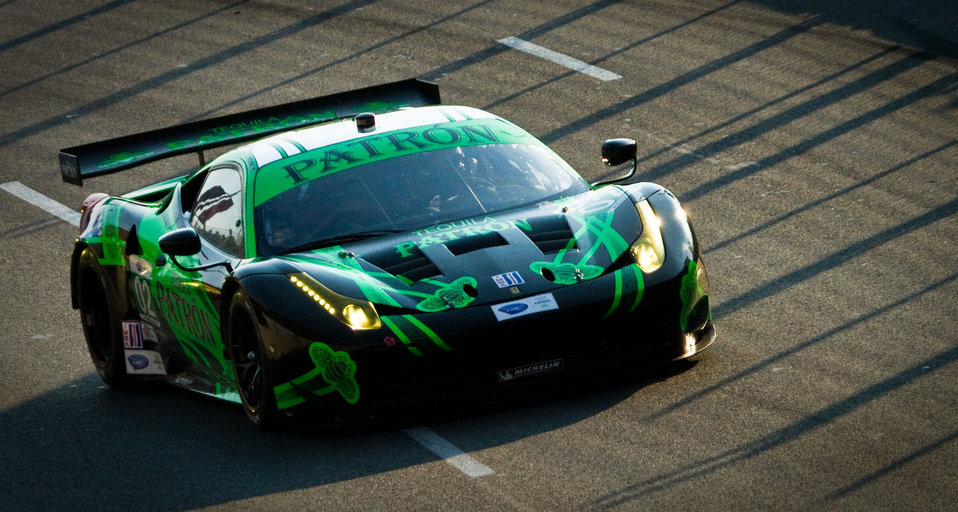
The Number 2, Ferrari 458 Italia of the Extreme Speed Motorsports Team, uses E85 fuel for the American Le Mans Series (ALMS) motorsport series at the Baltimore Grand Prix, on the streets of downtown Baltimore, MD, on Friday, August 31, 2012, Labor Day Weekend. ALMS says they are “the Global Leader in Green Racing by being the only racing series recognized to comply with the Green Racing protocols developed by the U.S. Department of Energy (DOE), the U.S. Environmental Protection Agency (EPA) and Society of American Engineers International (SAE).” Instead of high-octane gasoline all the cars in the series use one of 5 different forms of energy (system). Clean diesel, E85, E10, isobutanol or hybrid energy technology. The specific hybrid system, used by the Porsche GT3 cars, are a (battery-less) flywheel-based Kinetic Energy Recovery Systems. These organizations are accelerating technology development at speeds up to 200 mph, in 650-700 horsepower race cars that are based on two groups of cars; the purpose built prototype race cars and the GT
(Grand Touring) cars based on production sports cars that you can see in showrooms. From these groups, there are five classes of cars, all of which race at the same time during the race events.
The U.S. Department of Agriculture (USDA) focuses on renewable fuel sources that are profitable and sustainable. 2011 accomplishments include research and planning for renewable energy and investments in renewable energy production.
- Completed a Biofuels Roadmap proposing a plan of action to meet congressionally mandated RFS2 goals for national biofuels production.
-Coordinated five regional research centers to work on the science necessary to ensure profitable biofuels can be produced from a diverse range of feed stocks across the nation, not just in the Midwest where the industry is already thriving.
-Over three years, USDA invested about $320 million to accelerate research on renewable energy ranging from genomic research on bioenergy feedstock crops, to development of biofuel conversion processes and costs/benefit estimates of renewable energy production.
- More than 130 biodiesel and ethanol projects funded by USDA are currently producing almost 3.7 billion gallons of biodiesel and ethanol annually, enough fuel – in equivalence to gasoline – to keep five million vehicles on the road every year.
-We are supporting efforts to build five biorefineries to produce advanced biofuels in states from Florida and Michigan to New Mexico, with investments worth about $310 million. We are supporting facility upgrades and feasibility studies for advanced biofuels projects in every region of the country.